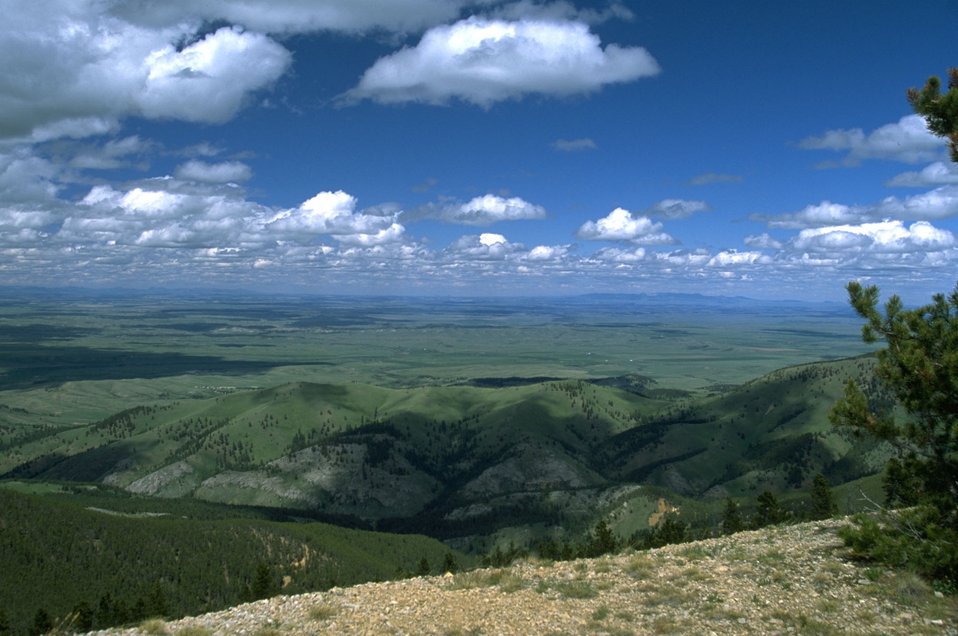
Scenic view of the Judith Mountains area